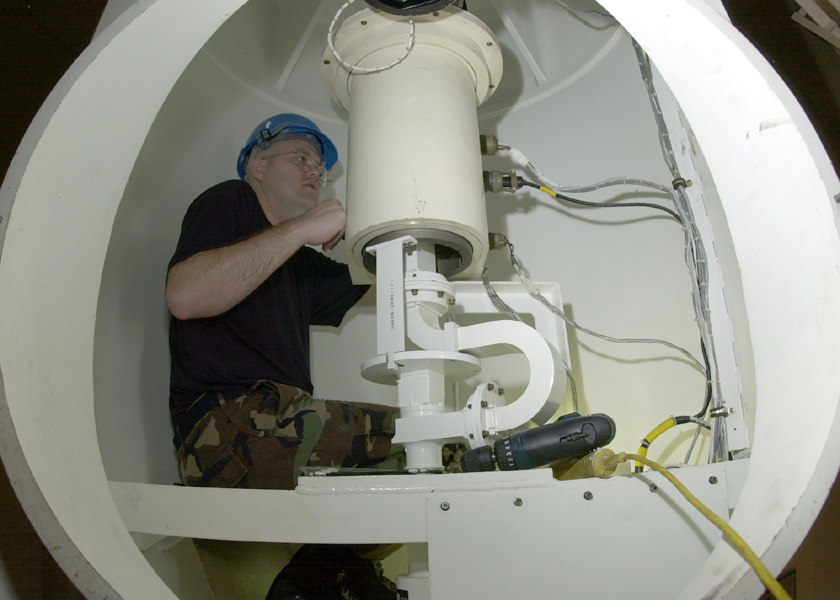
Cleaning the radar

ANDERSEN AIR FORCE BASE, Guam -- Tech. Sgt. Steven Goodlett cleans slip rings in a NEXRAD Doppler weather radar here during routine maintenance. Goodlett is assigned to the 36th Communications Squadron.